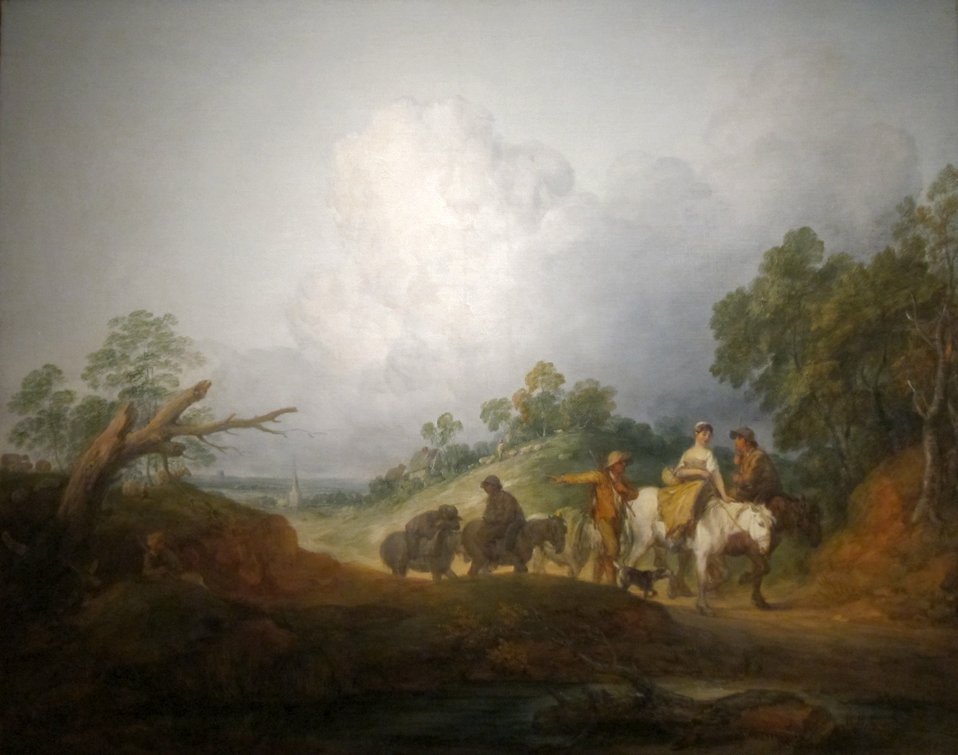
'Returning from Market', oil on canvas painting by Thomas Gainsborough, c. 1771-72, Cincinnati Art Museum